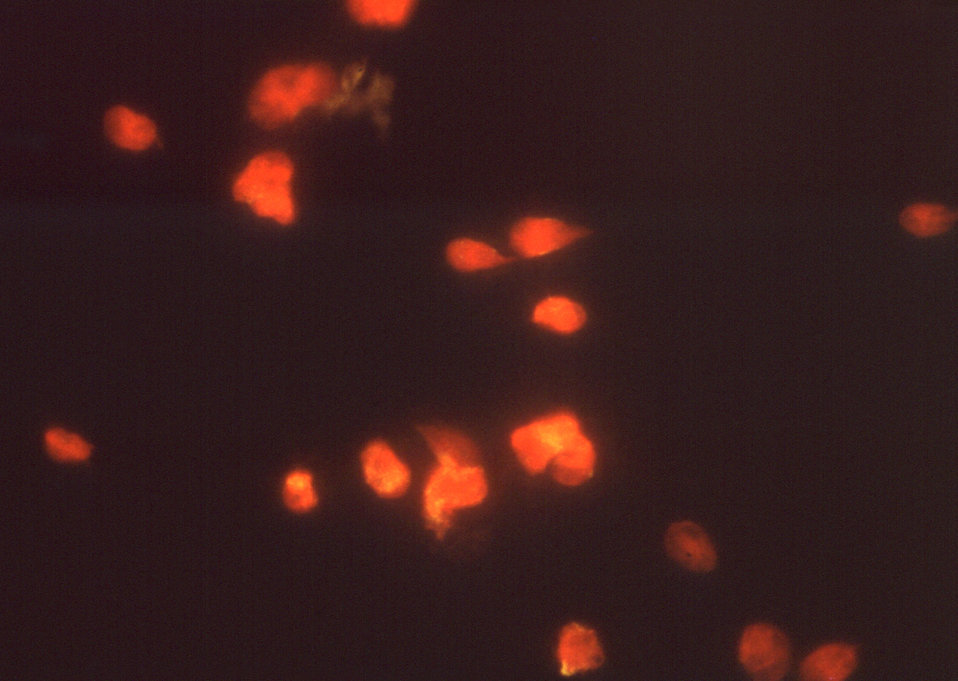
This photomicrograph depicts Giardia lamblia parasites using indirect immunofluorescence test for giardiasis.